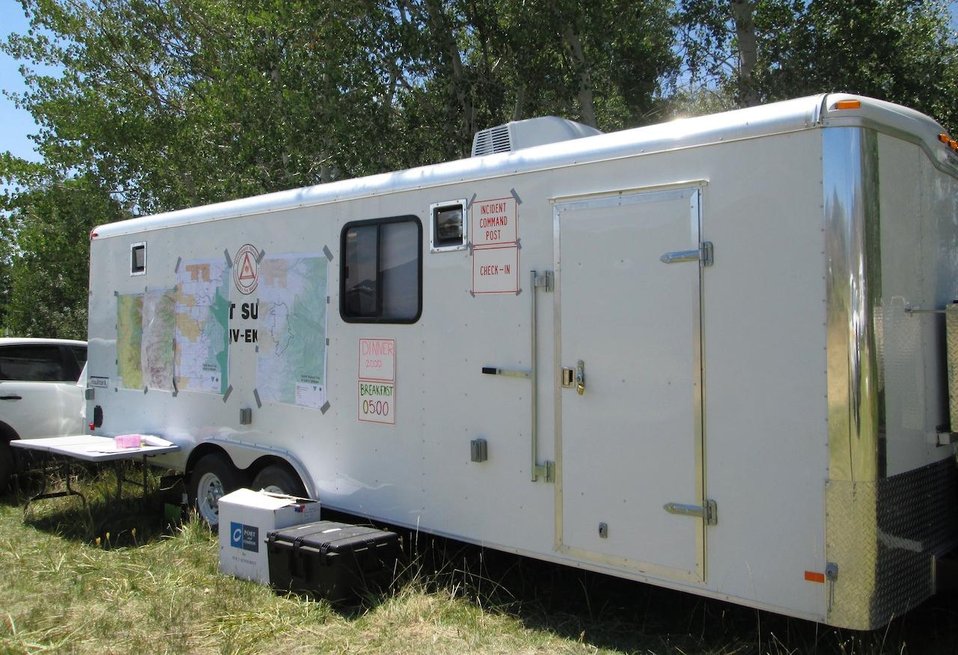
Incident Command Post at the Smith Ranch Fire located 10 miles northwest of Jiggs, NV. The Smith Ranch Fire began on Jul. 19, 2013 by lightning and has consumed approximately 2,759 acres. The Smith Ranch Fire is 100% contained.